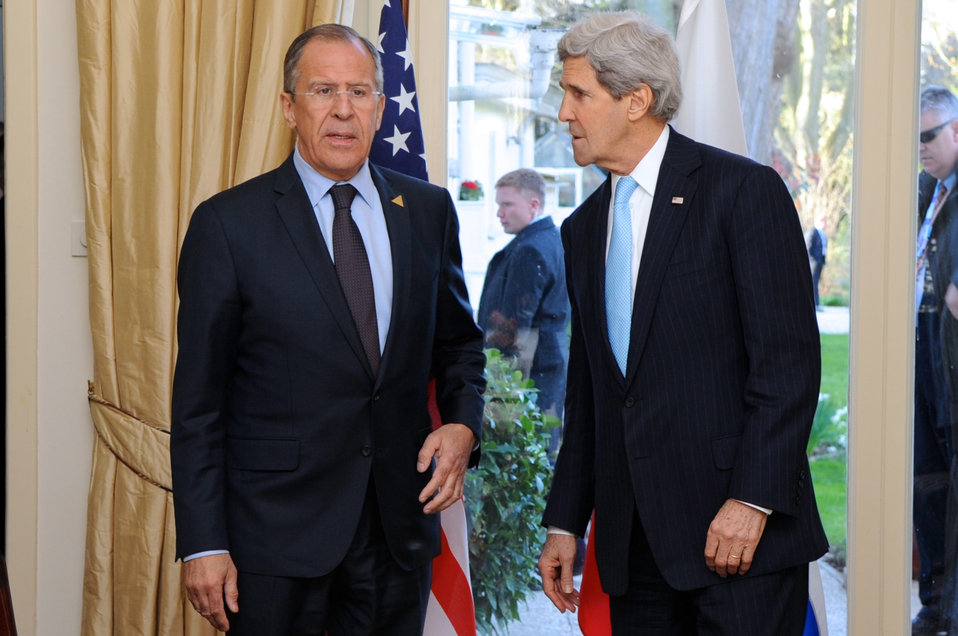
Secretary Kerry Meets With Russian Foreign Minister Lavrov in The Hague

U.S. Secretary of State John Kerry stands with Russian Foreign Minister Sergey Lavrov before a meeting on the margins of the Nuclear Security Summit in The Hague, the Netherlands, on March 24, 2014.